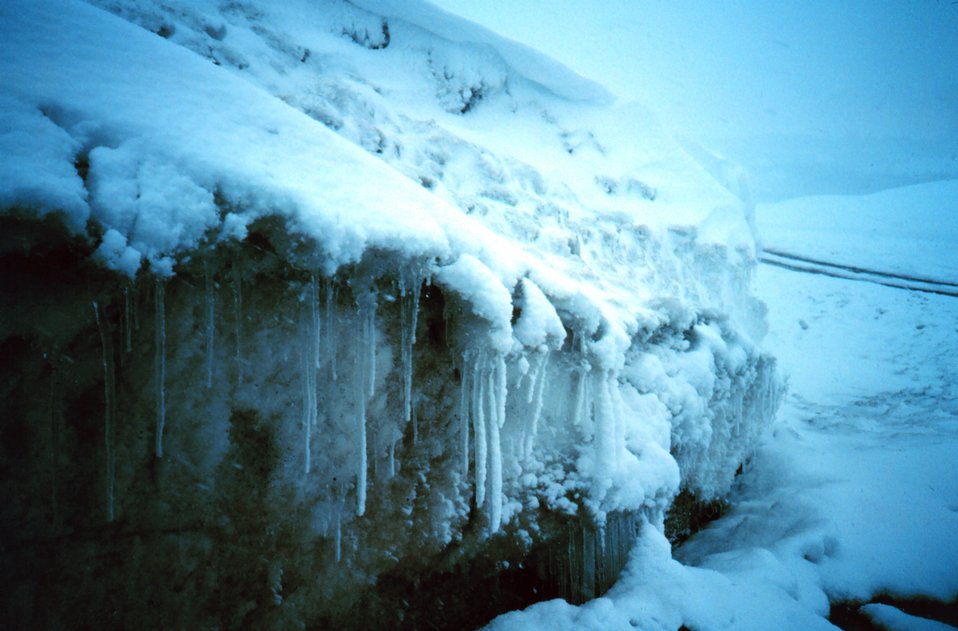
A frost heave along the Seward Highway